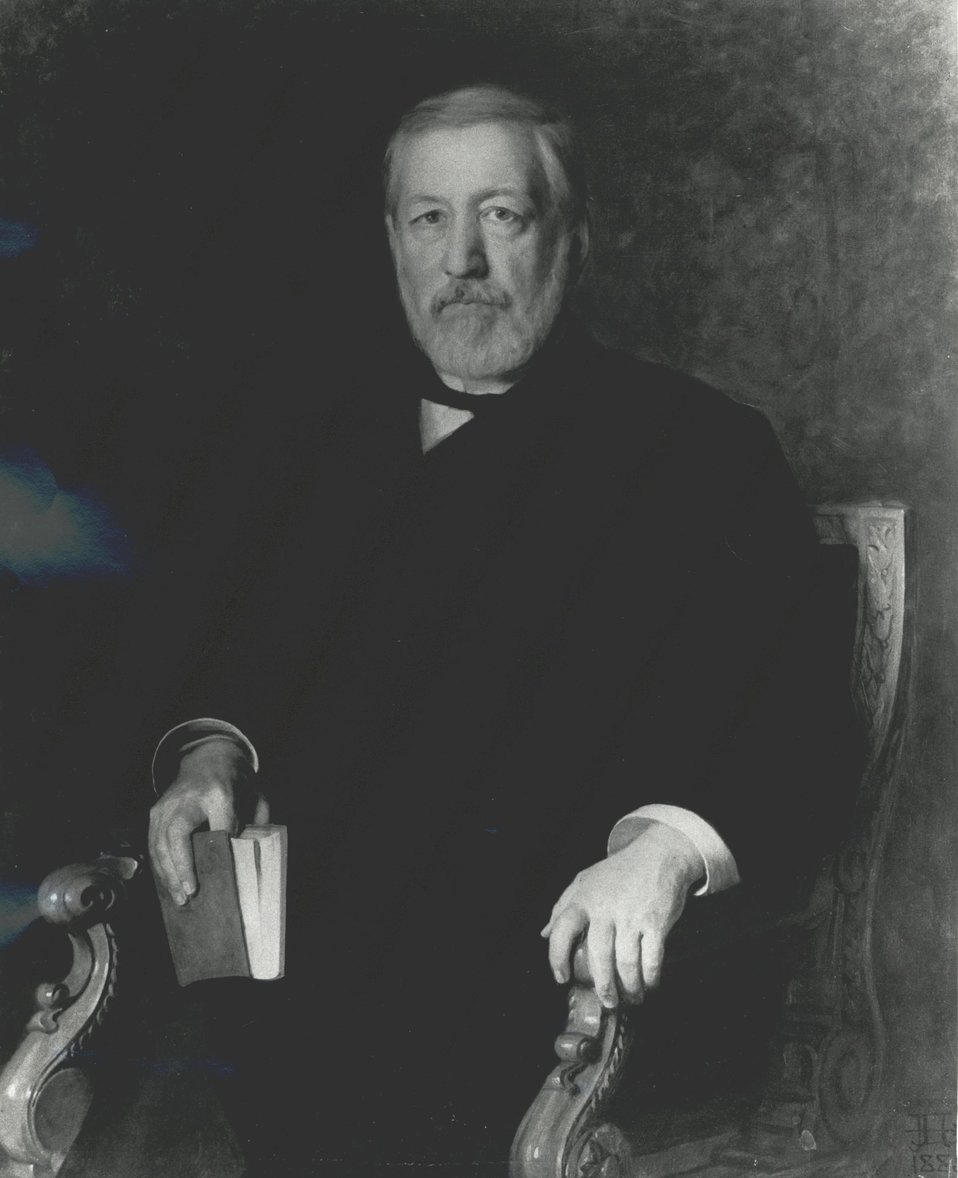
James G. Blaine, U.S. Secretary of State, March 7, 1881 to December 19, 1881 and March 7, 1889 to June 4, 1892